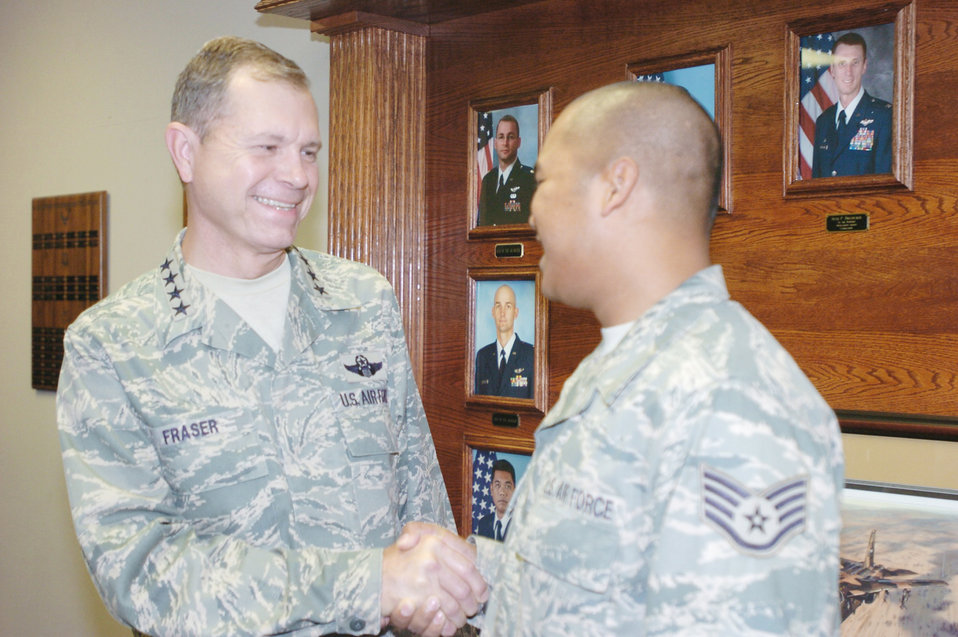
General impressed with Airman, Soldier synergy at Fort Hood

Gen. William M. Fraser III shakes hands with Staff Sgt. Ae Khone Sappasith during an Oct. 7 and 8, 2009, visit to Fort Hood, Texas. General Fraser is the commander of Air Combat Command, and Sergeant Sappasith is the 3rd Air Support Operations Group personnel resource manager.